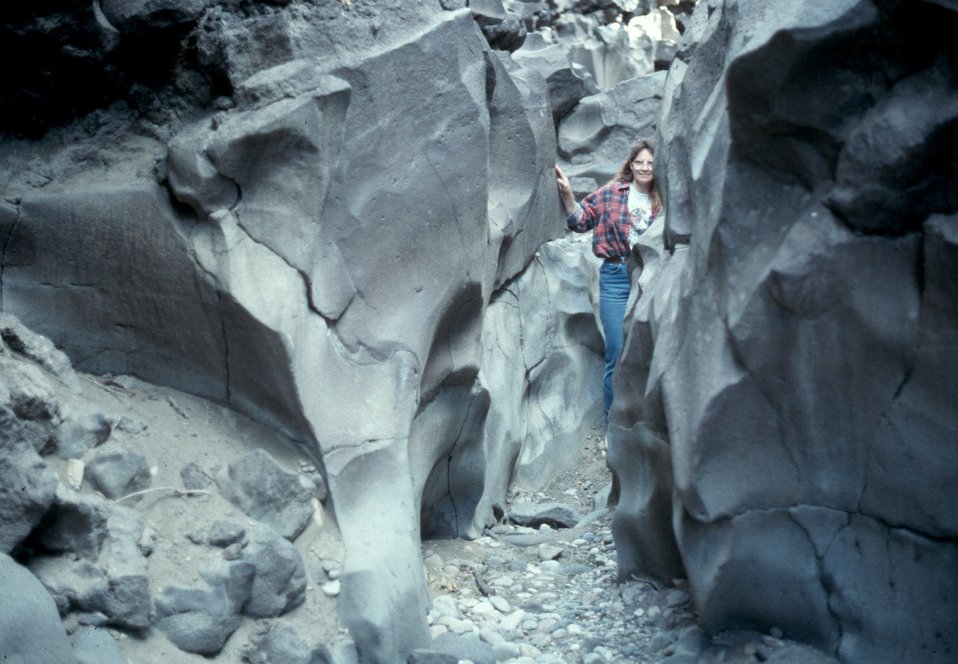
Inner channel Shoshone Field Office USRD Upper Snake River District